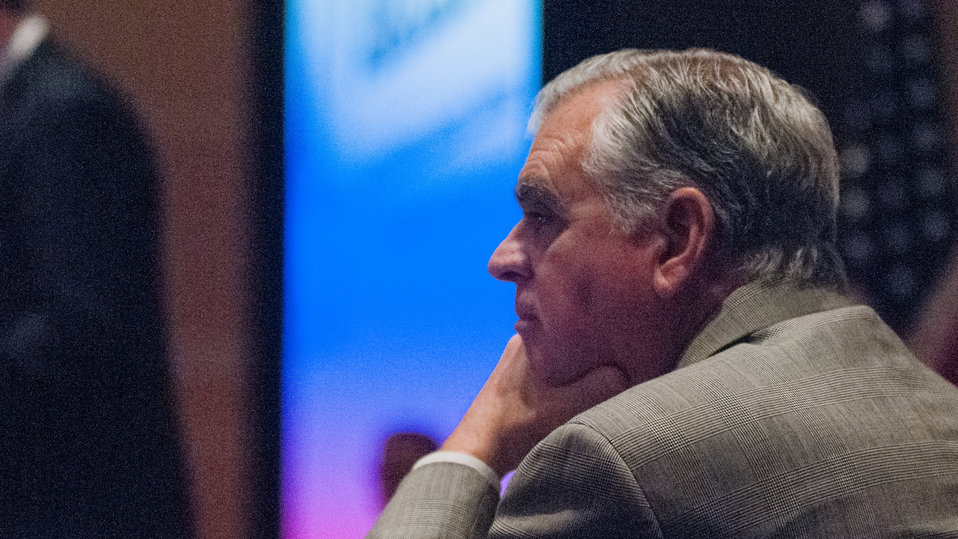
Department of Transportation Secretary Ray Lahood listens to Agriculture Secretary Tom Vilsack announcing today that the U.S. Department of Agriculture (USDA) is extending for five years its agreement to work with the Federal Aviation Administration (FAA) and other partners to help develop a viable biofuel for the aviation industry. The Secretary signed the agreement with U.S. Department of Transportation (DOT) Secretary Ray LaHood at the Advanced Biofuels Leadership Conference at Gaylord National Harbor in Maryland, Monday, April 15, 2013.